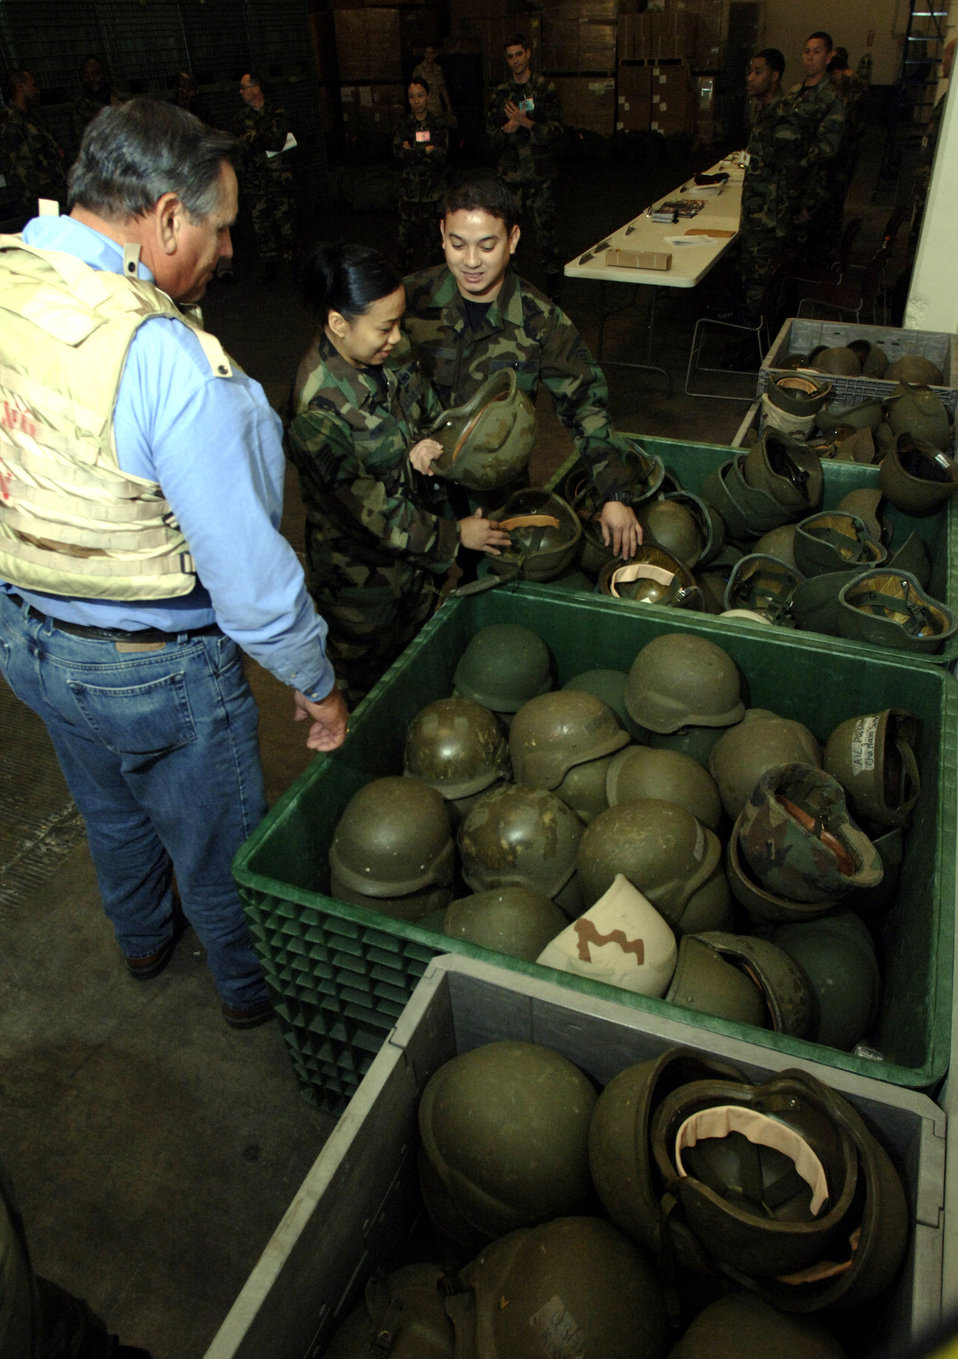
Civic leaders tour Travis during Air Force Week

Dan Borges, blue shirt, ries on a flak jacket during an honorary commanders tour, as part of Air Force Week, at Travis Air Force Base, Calif. on Jun. 7, 2007. The purpose of Air Force Week is to inform and educate the American public about the importance and roles of the Air Force in America's national defense.